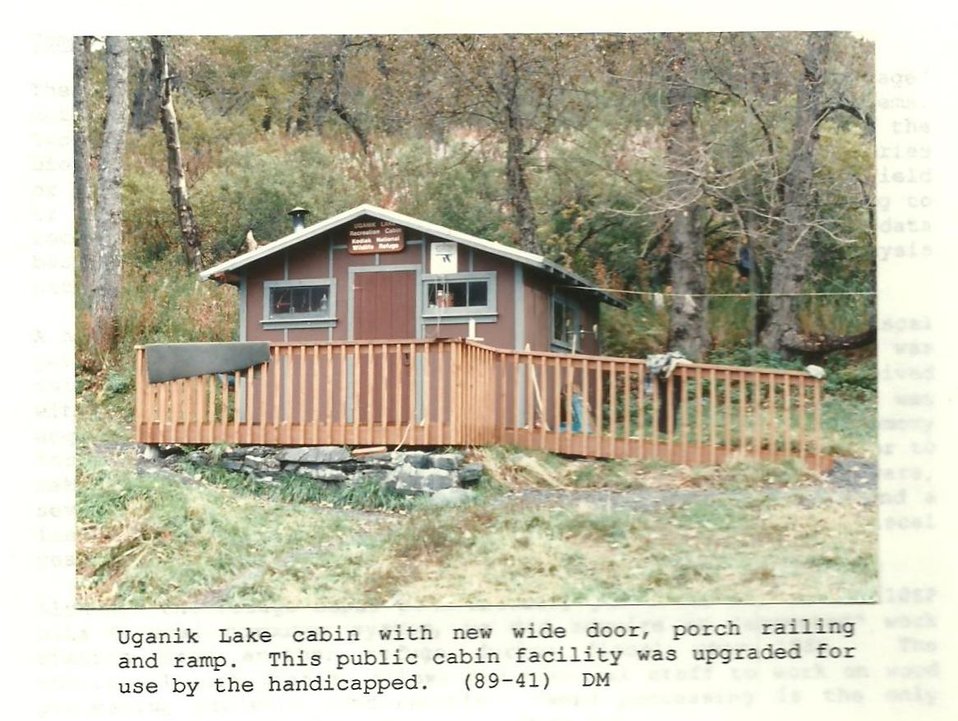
(1989) Uganik Lake Cabin

Credit: USFWS

Source and Contact: Kodiak National Wildlife Refuge